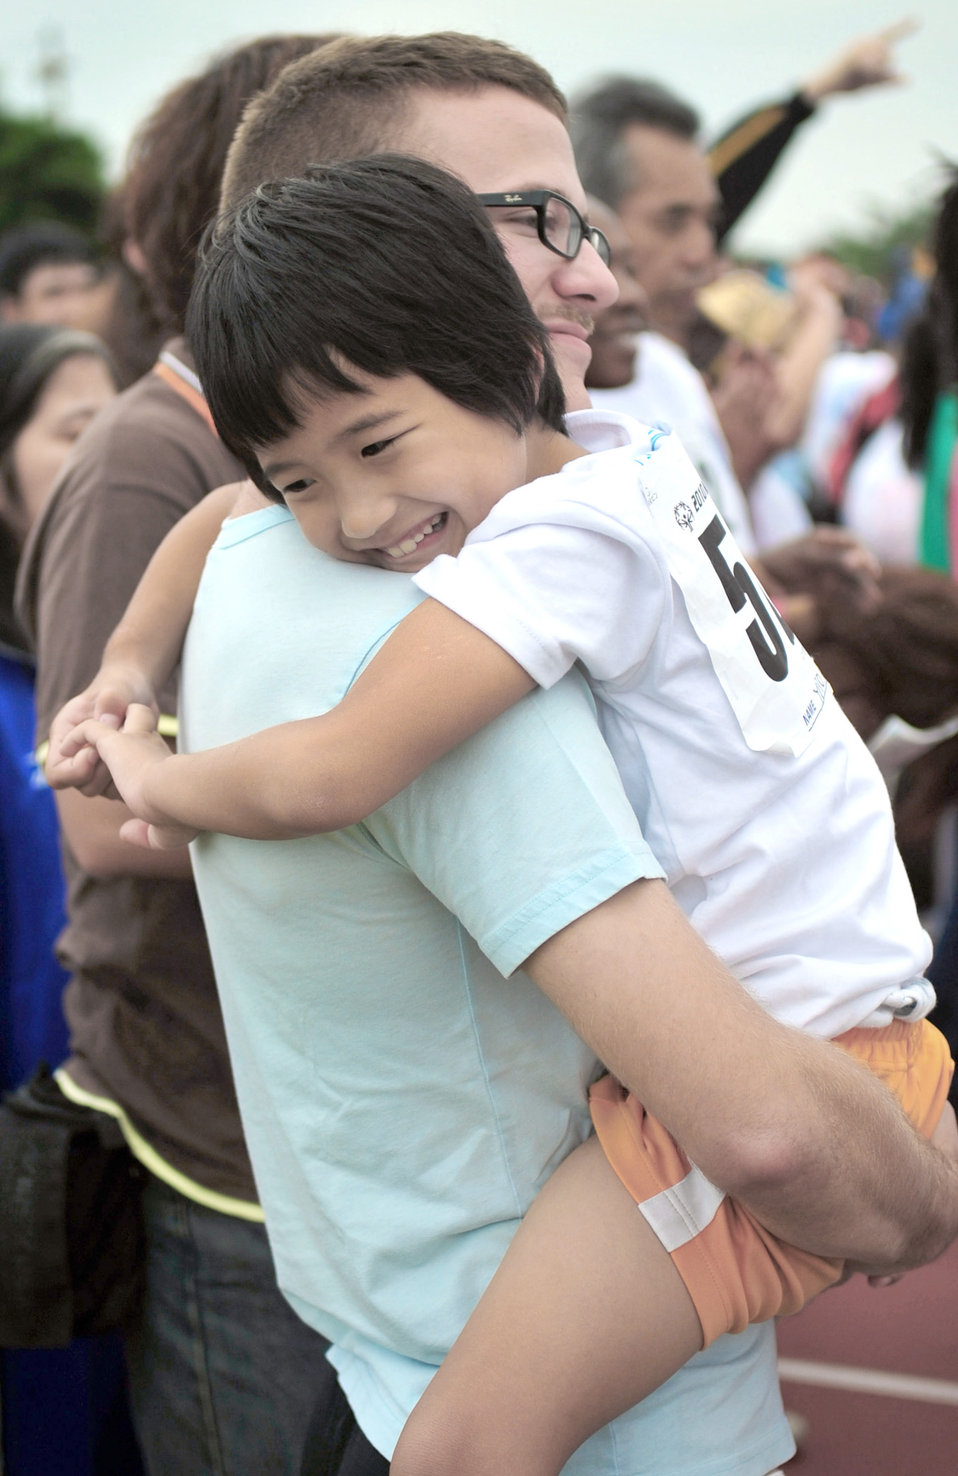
Kadena Special Olympics creates bond for new Airman

Airman 1st Class Matthew Renfro gives Yuto Uehara a hug for luck before Yuto's next event Nov. 6, 2010, during the Kadena Special Olympics at Kadena Air Base, Japan. Airman Renfro was a volunteer hugger for the event. He is assigned to the 18th Munitions Squadron.